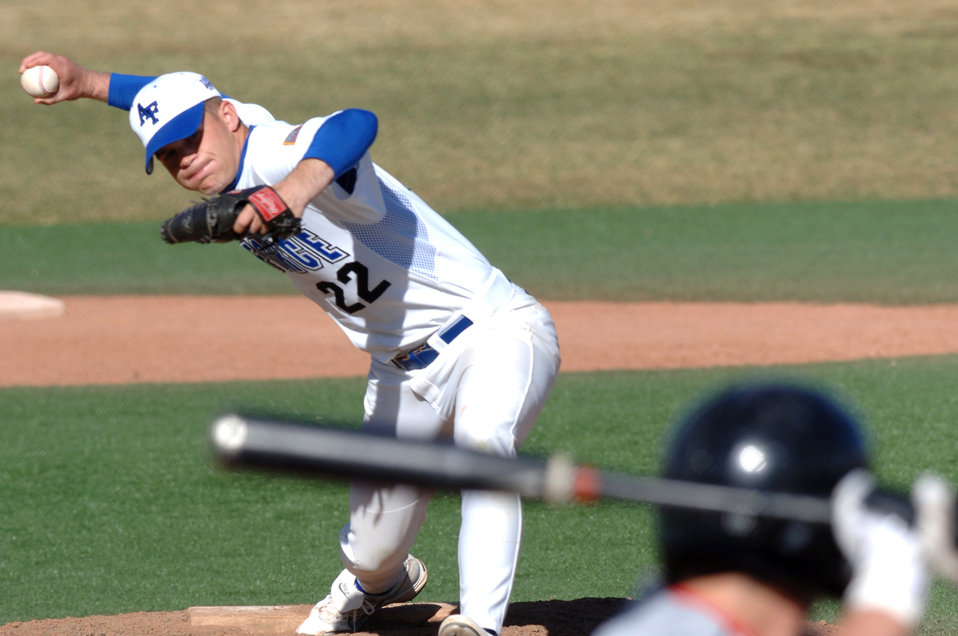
San Diego defeats Falcons

Senior pitcher Cadet Joe Peterson faces a batter late in the game during the 12-9 loss to San Diego State March 22.